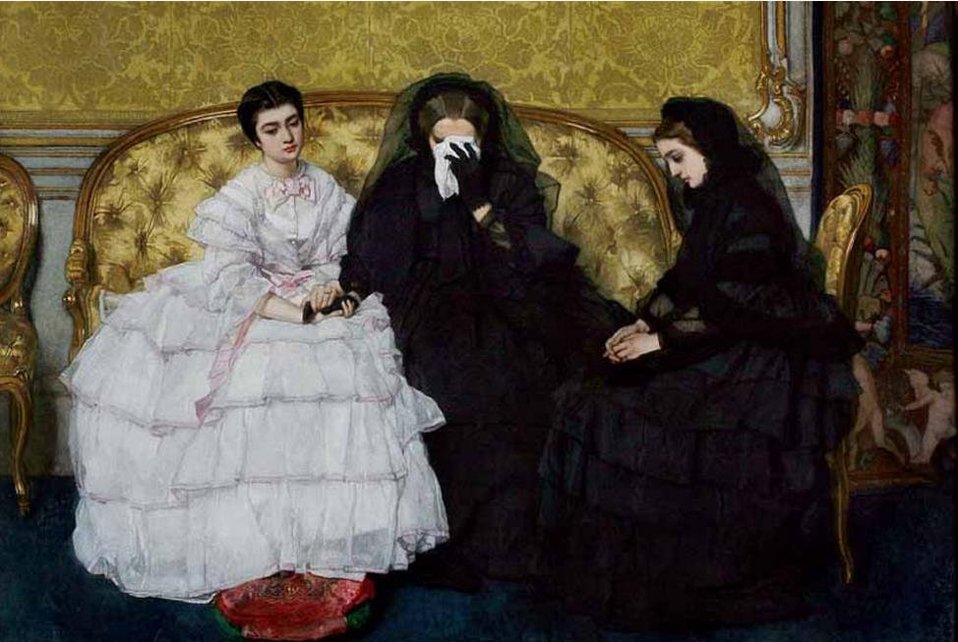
'In Memoriam', painting by Alfred Stevens